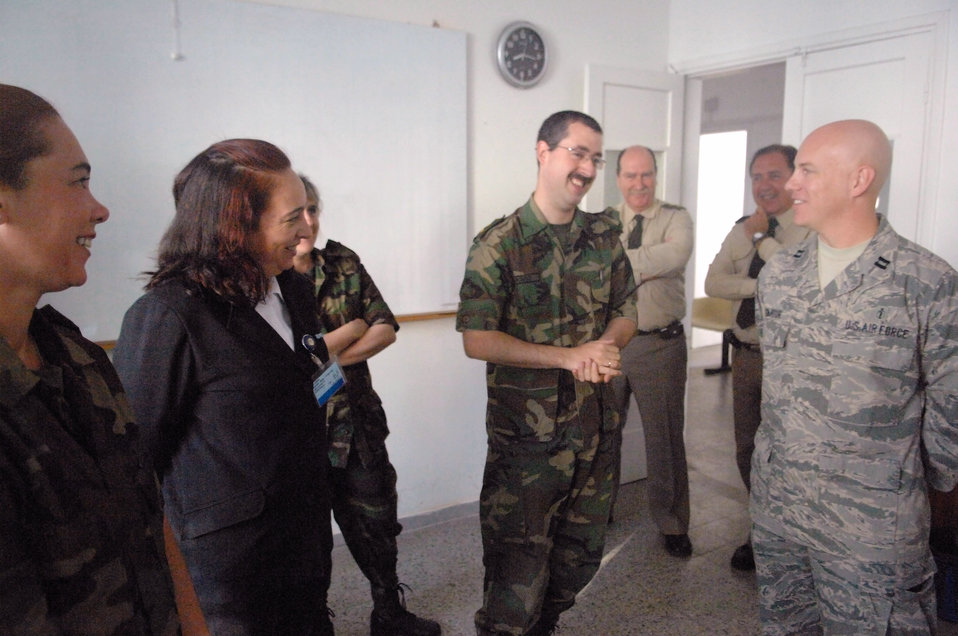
Forces combine to share disaster response techniques

Capt. Timothy Bonjour talks with Uruguayan counterparts Nov. 3 in Uruguay. He is part of a Defense Institute for Medical Operation disaster response and medical technique exchange. Captain Banjour is stationed at Travis Air Force Base, Calif.